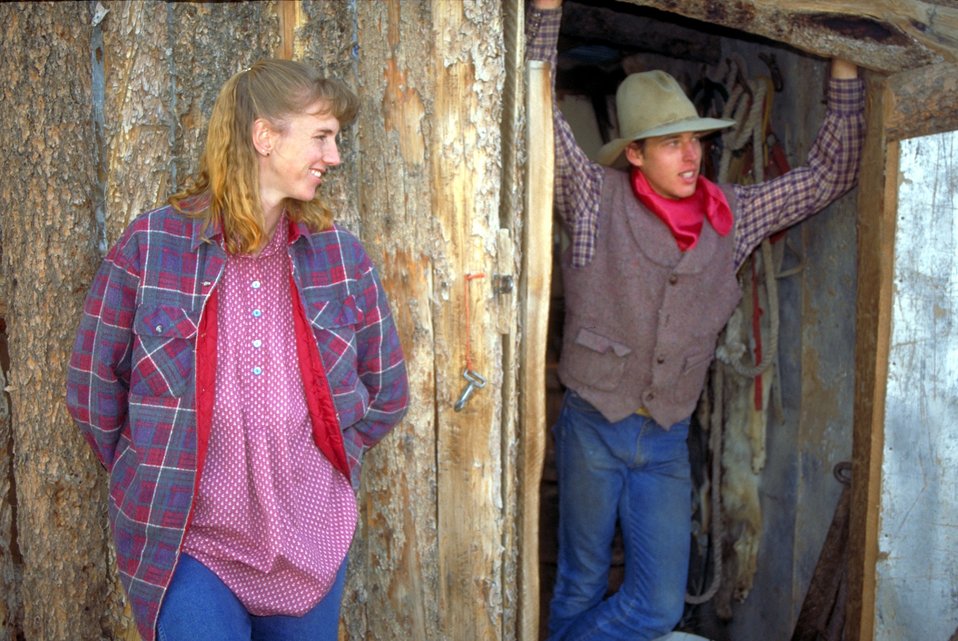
Working cowboys living near Vernal, Utah.